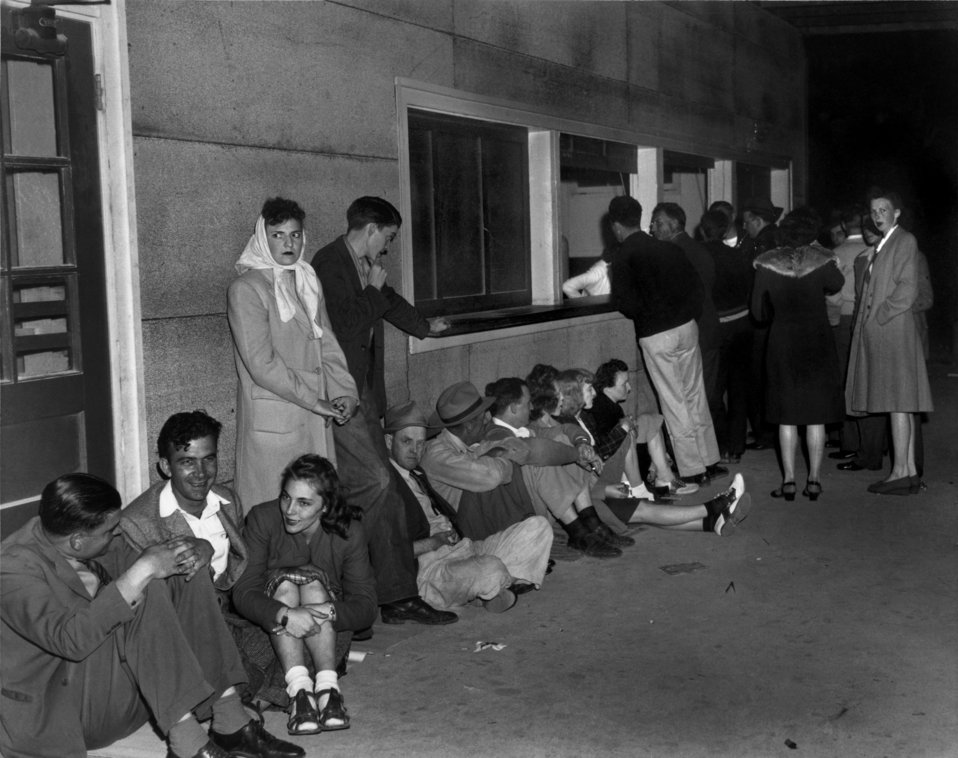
'Cigarette Line' at Jefferson Rec. Oak Ridge

pro 469 DOE Photo Ed Westcott 4/26/45
Oak Ridge Tennessee